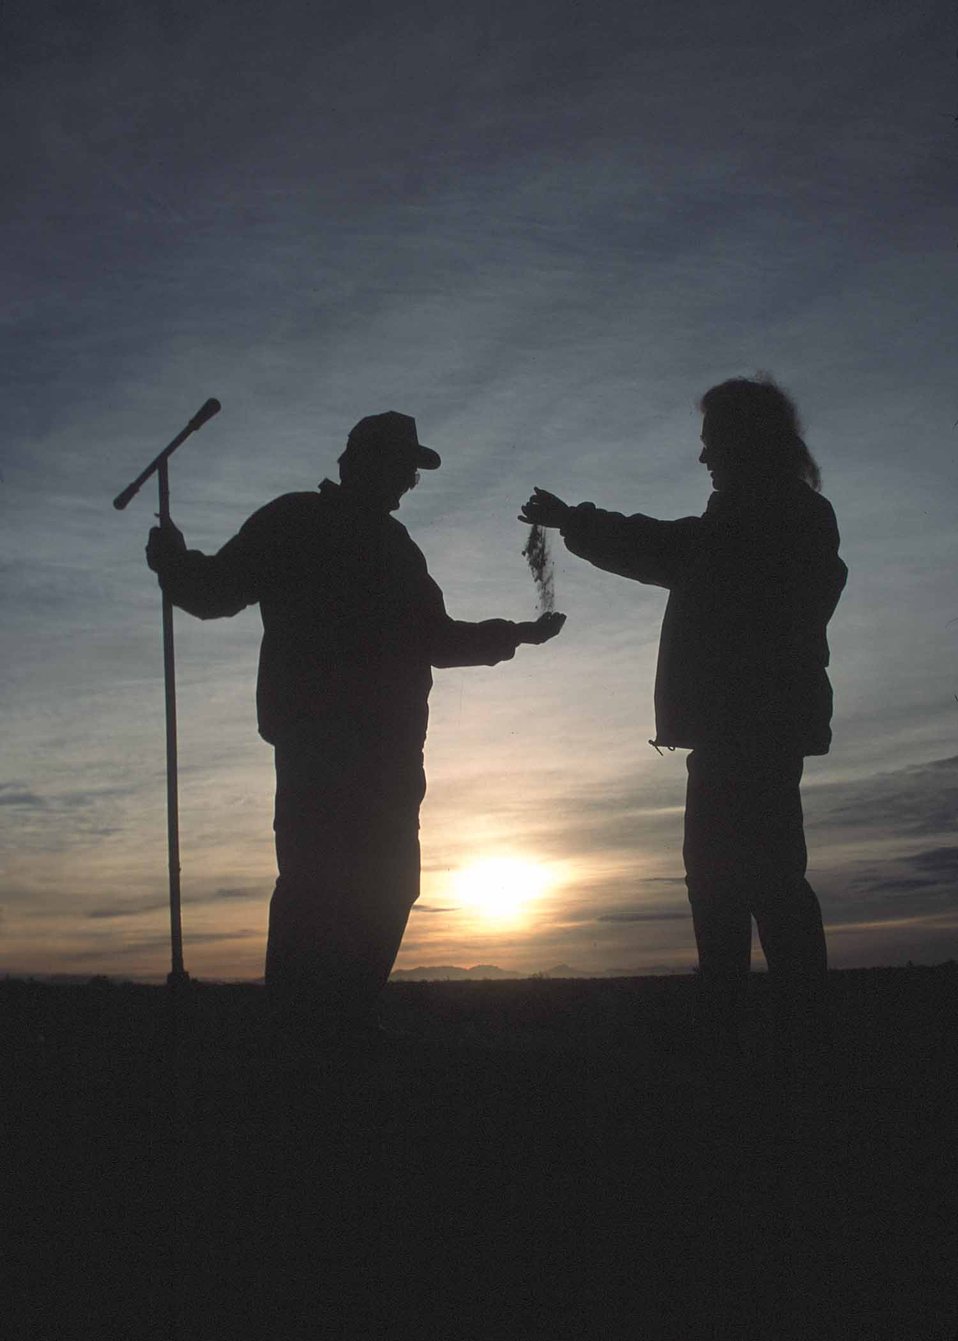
District Conservationist Bobbi McDerMott and technician Neal Hoy taking soil samples and checking soil moisture. Yuma, Az.